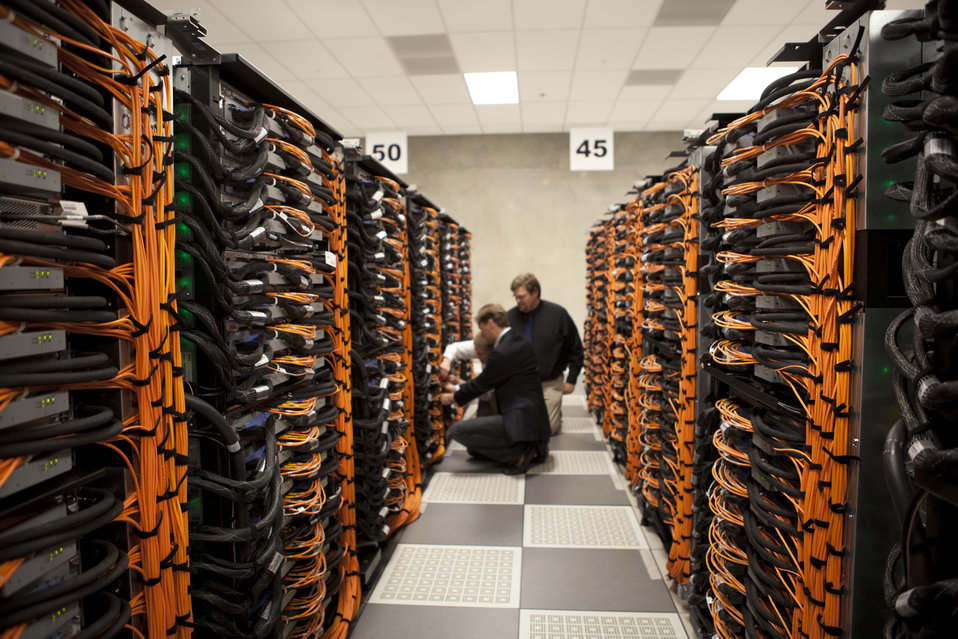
At Argonne National Laboratory, MIRA has been ranked the third faster supercomputer in the world as of 2012.